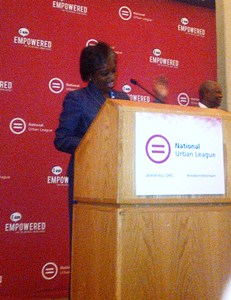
National Urban League Joint Leadership Luncheon 7-24-2013

Chairwoman Clyburn speaking at National Urban League Joint Leadership Luncheon.